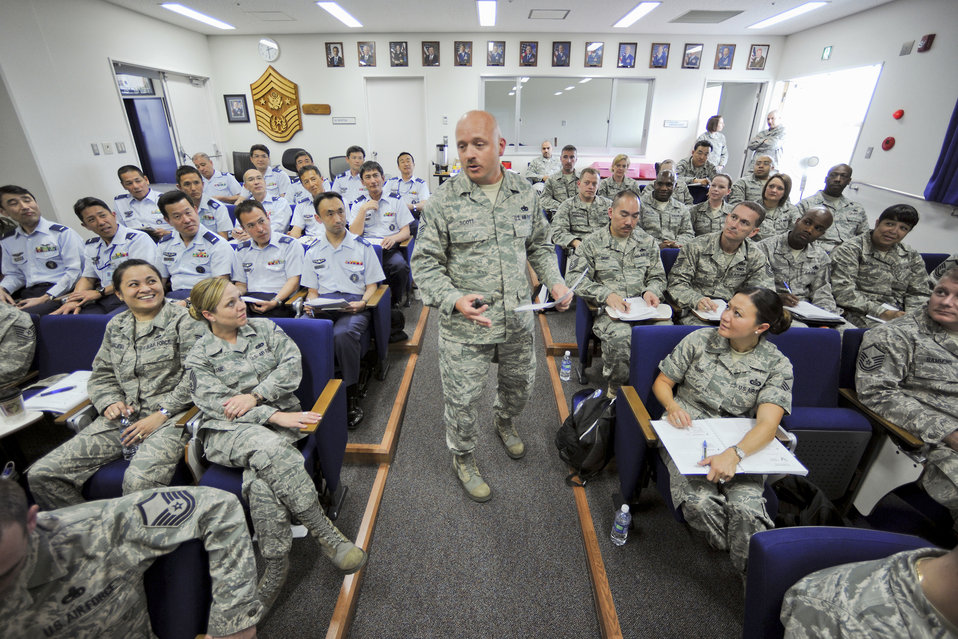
1st Shirt Symposium

Senior Master Sgt. David Scott prepares 99 enlisted leaders from around Japan to better care for their airmen during the Additional Duty First Sergeant Seminar May 11 through 14, 2010, at Yokota Air Base, Japan. Sergeant Scott is the Air Force First Sergeant Academy active-duty course director.